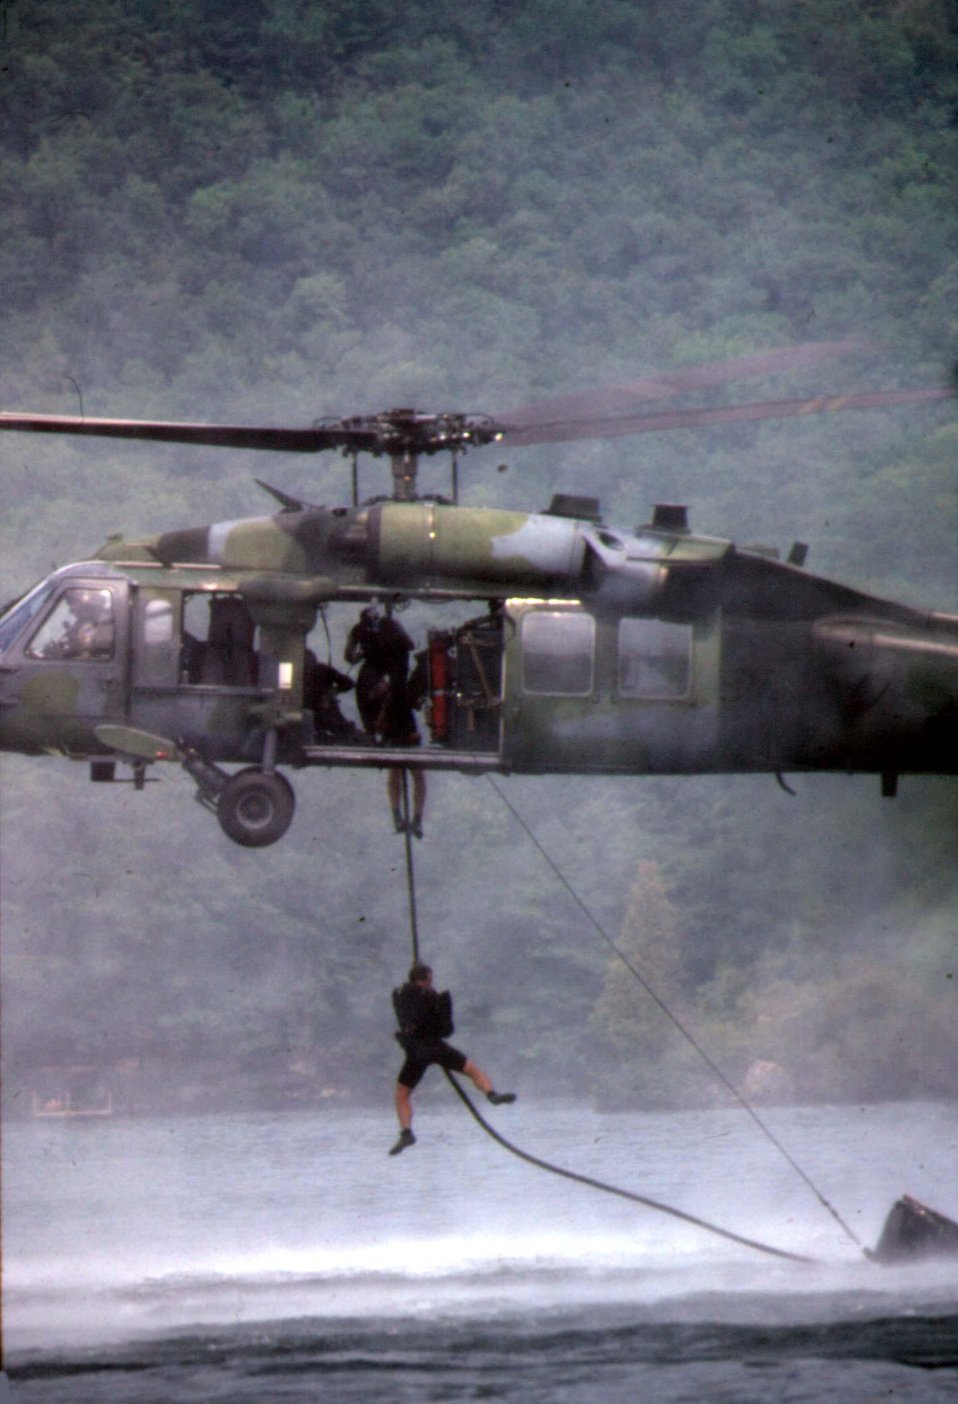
Pave Hawk

FILE PHOTO -- Pararescuemen from the 102nd Rescue Squadron, New York Air Guard, fastrope from an HH-60G helicopter into Lake George. The HH-60G Pave Hawk is equipped with an all-weather radar which enables the crew to avoid inclement weather. To extend their range, Pave Hawks are equipped with a retractable in-flight refueling probe and internal auxiliary fuel tanks. Pave Hawks are also equipped with a rescue hoist with a 200-foot cable and 600-pound lift capability.